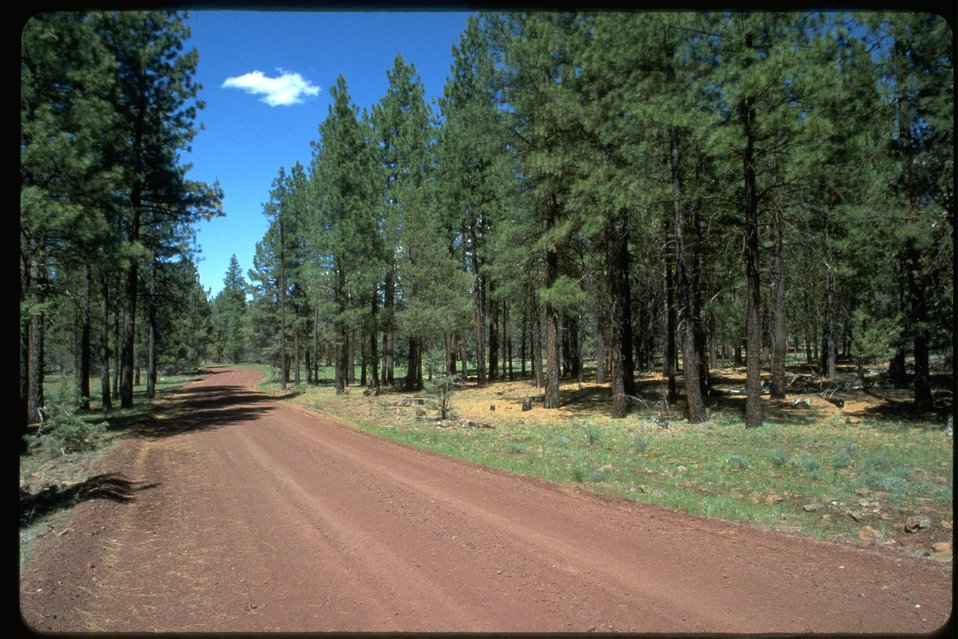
South end of Main Haul Road looking north. Gerber Block.